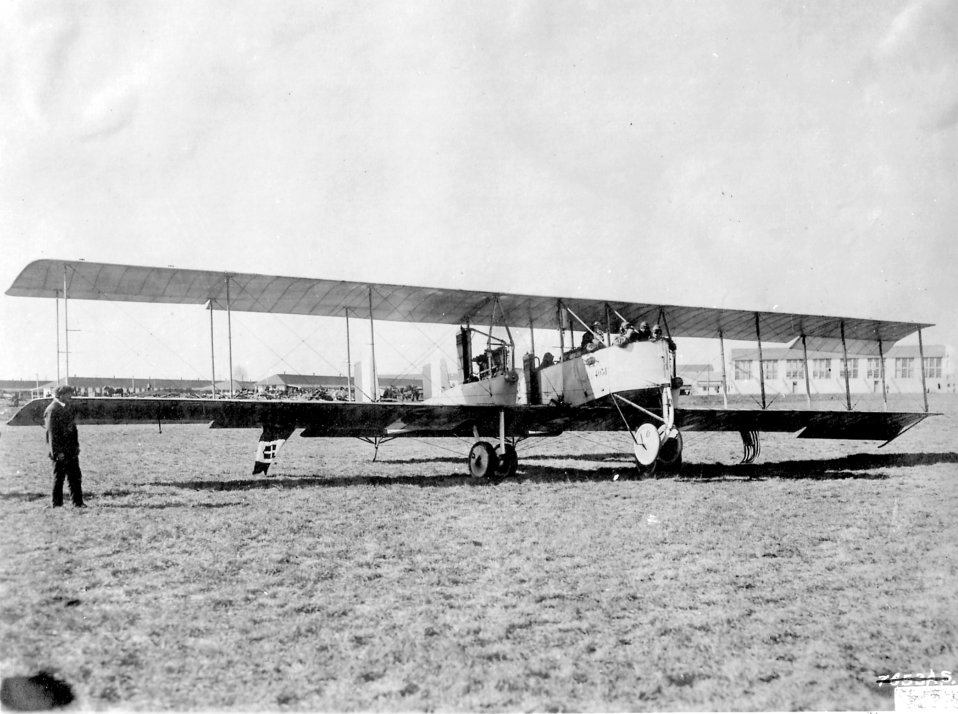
Caproni Ca.36 bomber

EARLY YEARS -- Caproni Ca.36 -designed bombers were produced during the 1917-1918 period, including a massive triplane, and a 600 HP enlargement of the Ca 33, but none of these realy exceeded the combination of load, range, and reliability that were characteristic of the earlier aircraft.